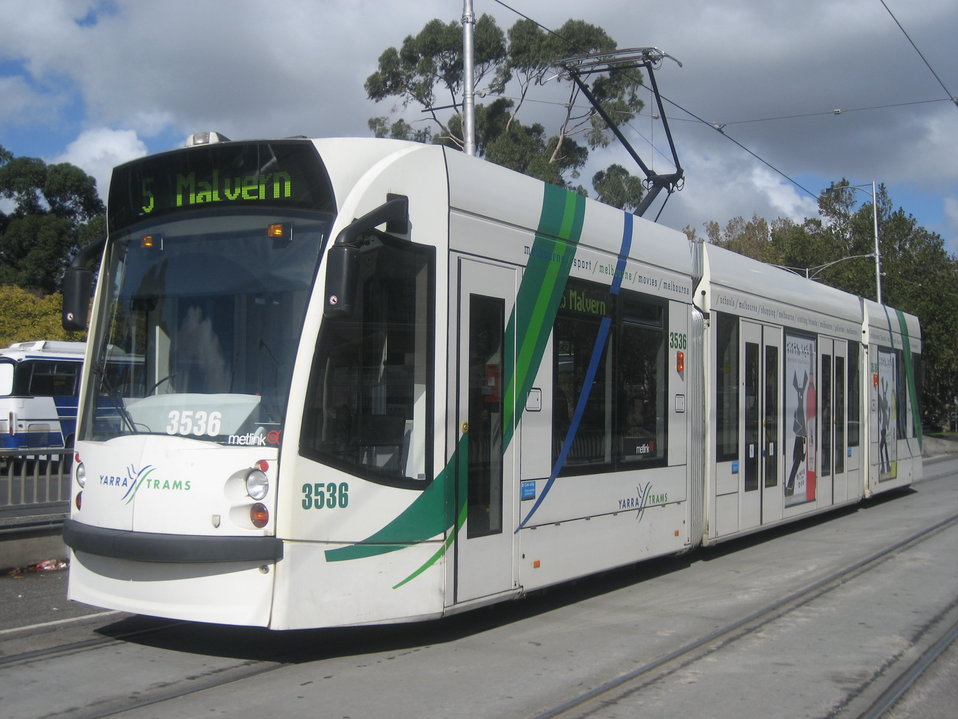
D1.3536 at the Arts Centre, St Kilda Road.